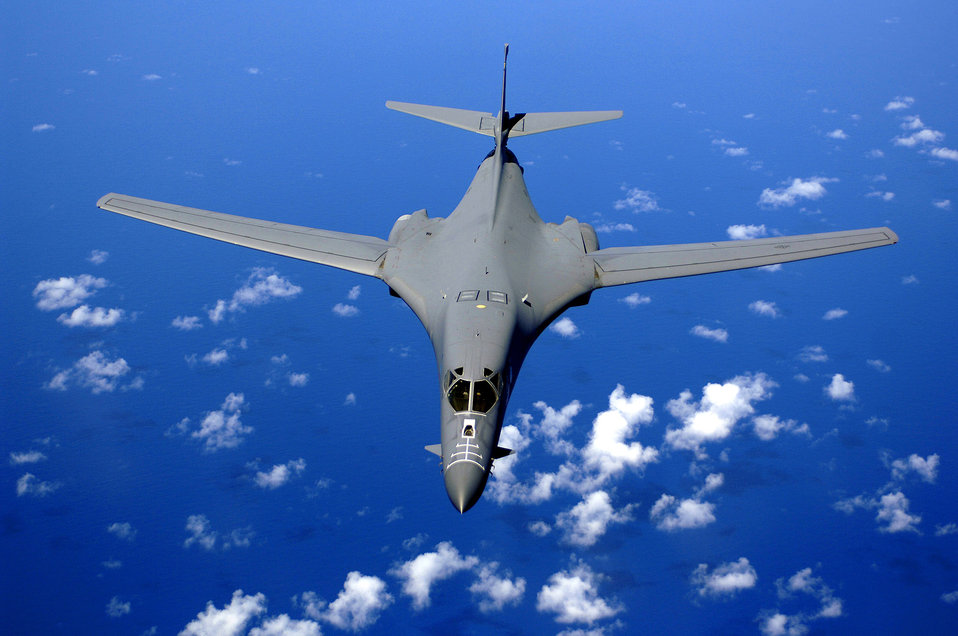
Air Force will get new bomber

General Ronald E. Keys, Air Combat Command commander, said the Air Force is looking to get a next-generation long-range bomber by 2018. The command is funded for a new bomber, he said during his presentation Sept. 26 at the Air Force Association's Air & Space Conference and Technology Exposition in Washington D.C. Meanwhile, the current bomber fleet, including this B-1B Lancer, flying over the Pacific Ocean, will continue to be a mainstay in the war on terrorism.